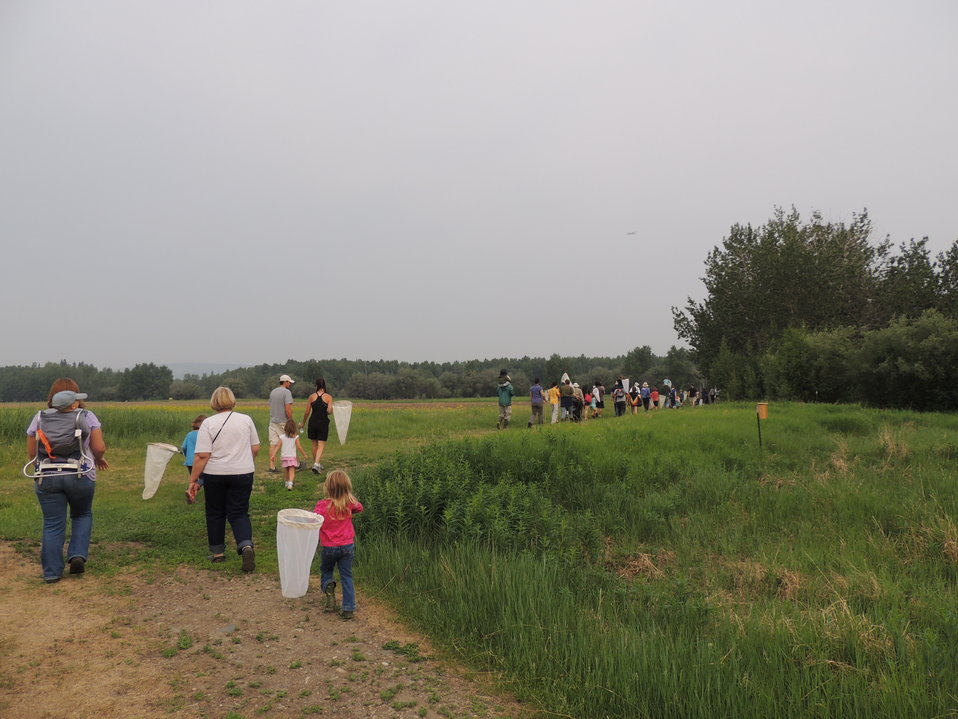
Guided nature walks at Creamer's Field

(USFWS)